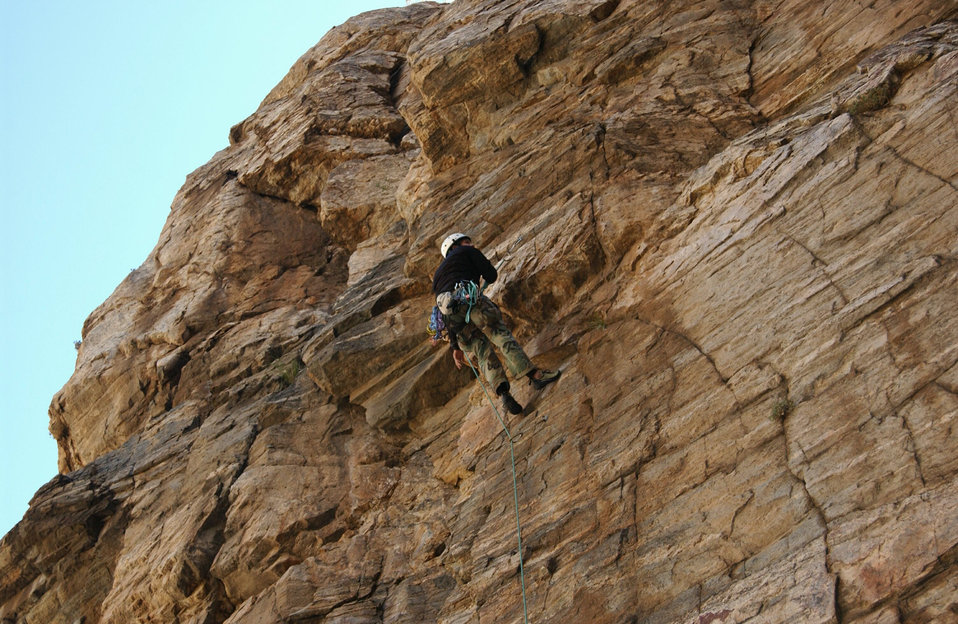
Climb time

TUSCON, Ariz. -- Senior Airman Kenny Ortega climbs Mount Lemmon here during a training mission. He is a pararescueman assigned to the 563rd Rescue Group at nearby Davis-Monthan Air Force Base.